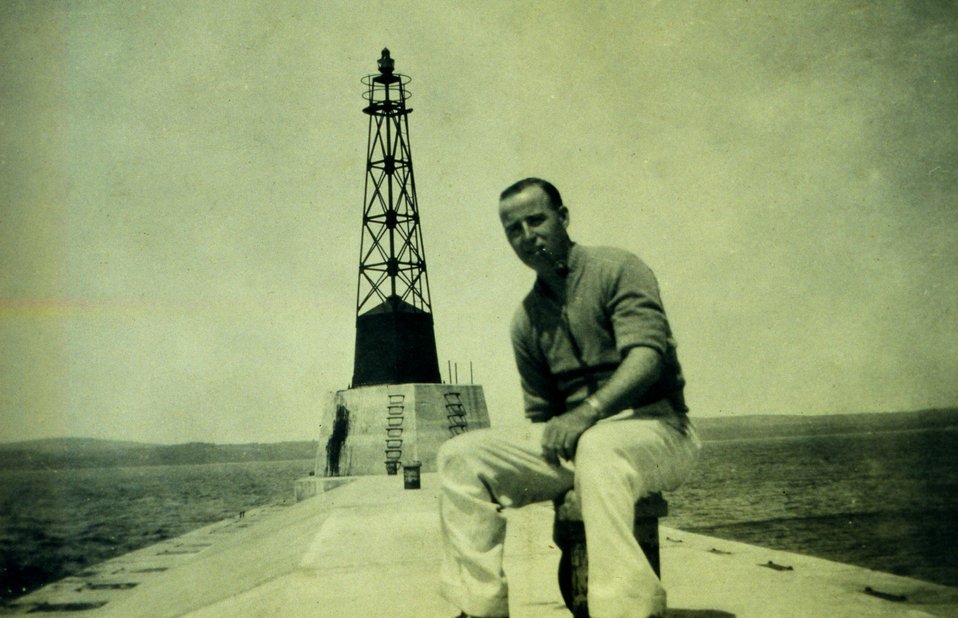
The breakwater at Little Traverse Bay.